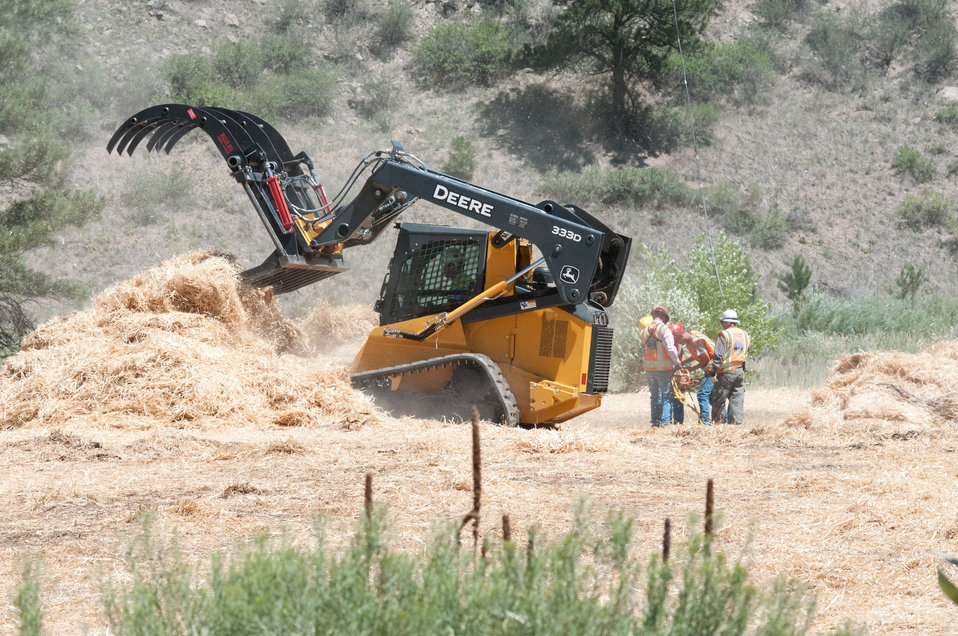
A hydraulic hay fork grapple attachment makes easy work of loosening and adjusting straw bale density and weight for the continuing aerial application of straw to mitigate soil and ash runoff from the mountainous terrain leading to Seaman Reservoir, drinking water resource for the City of Greeley, on Friday, July 20, 2012. Bell UH-1H (2-blade rotor) and A-Star Model B (3-blade rotor) aircraft launched from a landing zone at the foot of the reservoir spillway. The 100-150-foot cable holds and releases loads of certified straw weighing 1,400 – 2,000 pounds. 4-person load crews and heavy equipment operators unloaded 1,000 pound straw bales from tractor trailer rigs, stack them near the pickup point, then bring the bales onto cargo nets, open then loosen and adjust the load on cargo nets for helicopters to lift and drop them onto barren, burned out tributary lands. Forest service lands received straw, while private and other lands receive a seed mix and straw to promote ground cover plant growth on ash-covered lands. In total, 1,800 tons of straw will be applied during the 14-day operation. One quarter of the cost was paid by the City of Greeley and the U.S. Department of Agriculture funded the remainder. The Hewlett Gulch Fire was started by a camper’s alcohol stove, on May 14, at the saddle of a picturesque mountain ridge along the Hewlett Gulch Trail of Poudre Canyon, in the Roosevelt National Forest, 60 miles north of Denver. At it’s more than 400 firefighters were battling fires being pushed by 50 mph winds that helped blacken over 12-square-miles of dry ground cover, brush and trees. Many of the trees were already dead and tinder dry from beetle-kill. The water in the reservoir remains clean and clear, while downstream water flow has gone from famous Colorado clear water to nearly black flows of water heavily laden with ash, silt, and burnt debris that recent thunderstorms have already washed down from the mountainsides.